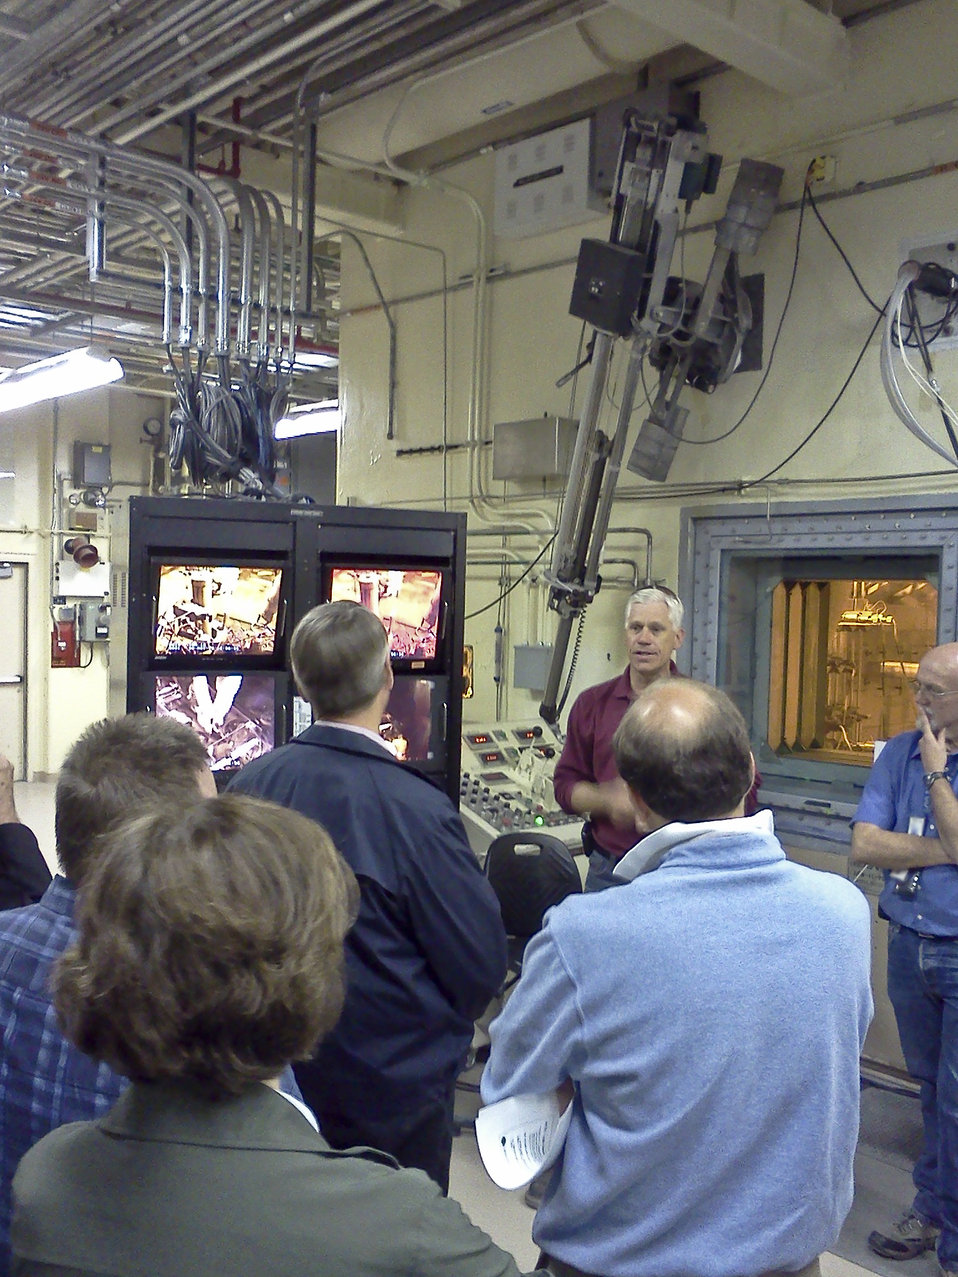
EMAB on Idaho visit

CWI project director Scott Anderson briefs Environmental Management Advisory Board (EMAB) members on the remote-handled transuranic waste repackaging efforts. Following certification, RH-TRU is transported to the Waste Isolation Pilot Plant in New Mexico for permanent disposal.